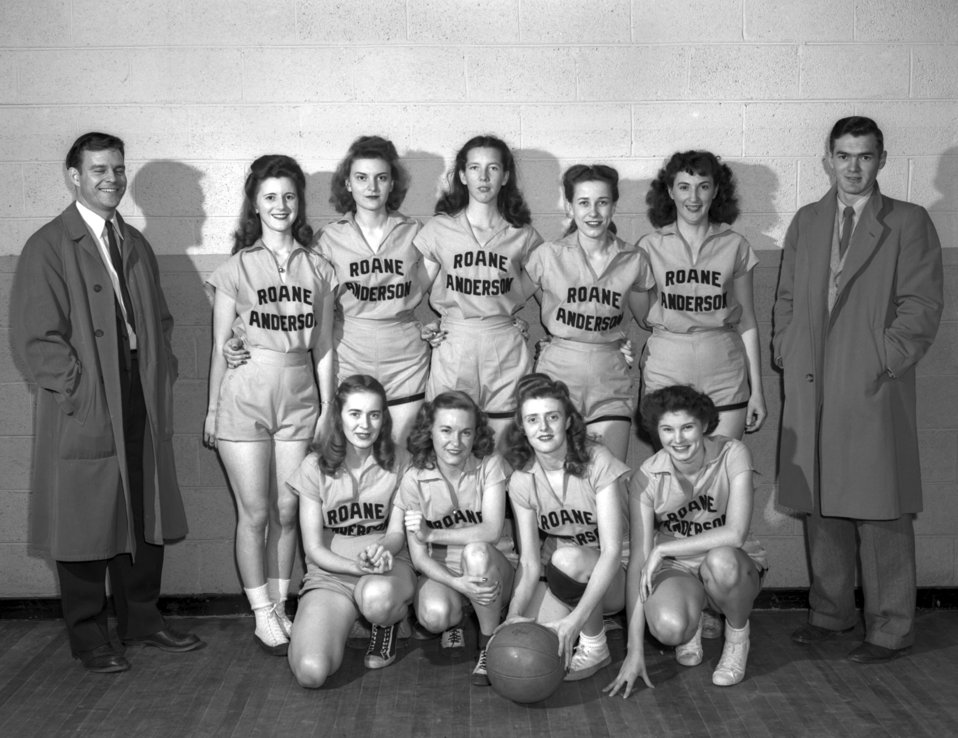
R. A. Basketball Oak Ridge

3271-4 DOE photo Ed Westcott 1-20-1947 Oak Ridge Tennessee